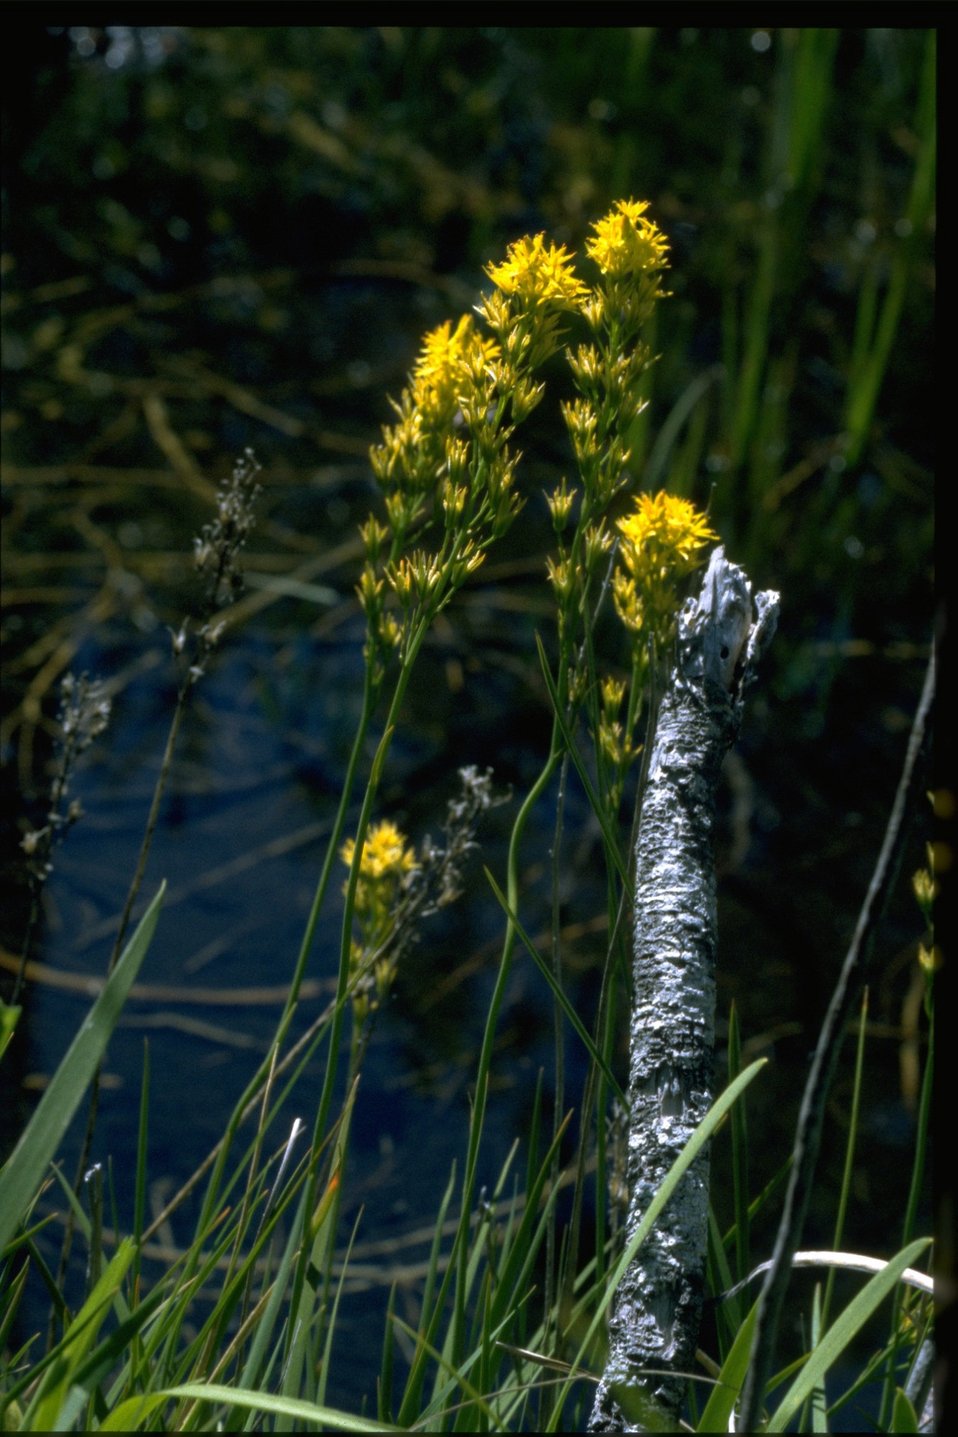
Medium shot of Northecium californicum.